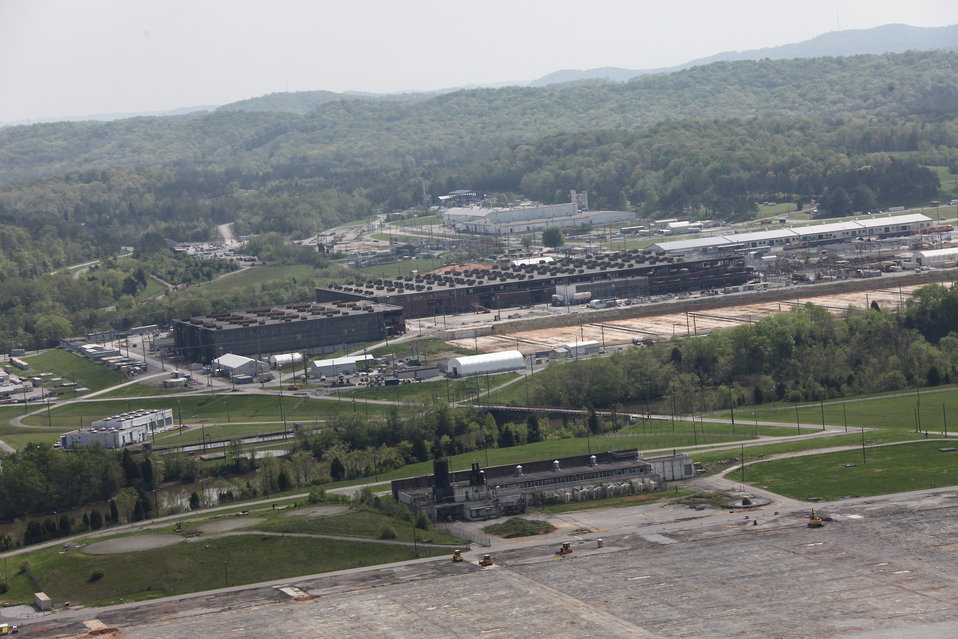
ETTP